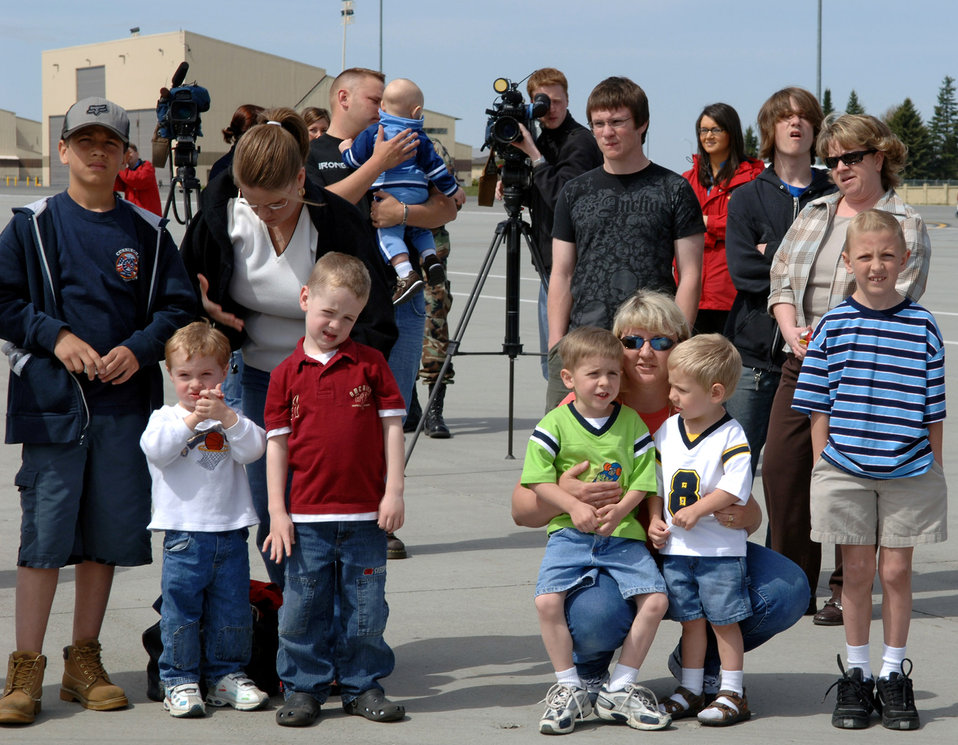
Fairchild Airmen reunite with family after deployment

Family, friends and media wait for 44 Airmen to disembark a KC-135 Stratotanker April 30 at Fairchild Air Force Base, Wash. The Airmen returned after their deployment to support Operation Enduring Freedom at Manas Air Base, Kyrgyzstan.